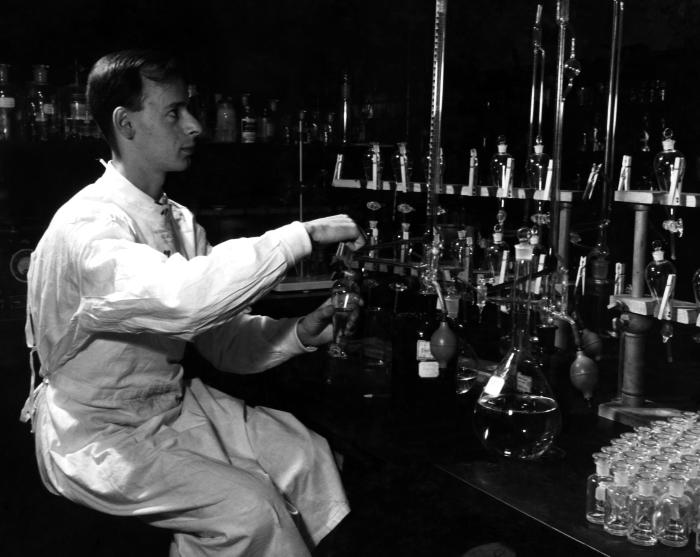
This November, 1943 photograph was provided by the Center for Disease Control's (CDC), National Institute for Occupational Safety and Health (NIOSH). Inside Dr. Goldman's laboratory, which was a part of the National Institutes of Health (NIH), Industrial Hygiene Division, this image depicted a chemist who was in the process of analyzing various samples at his lab bench. Though he was wearing a lab smock, he was wearing no protective filtered breathing mask, goggles, or gloves, which would have protected him from airborne or spilt contaminants.